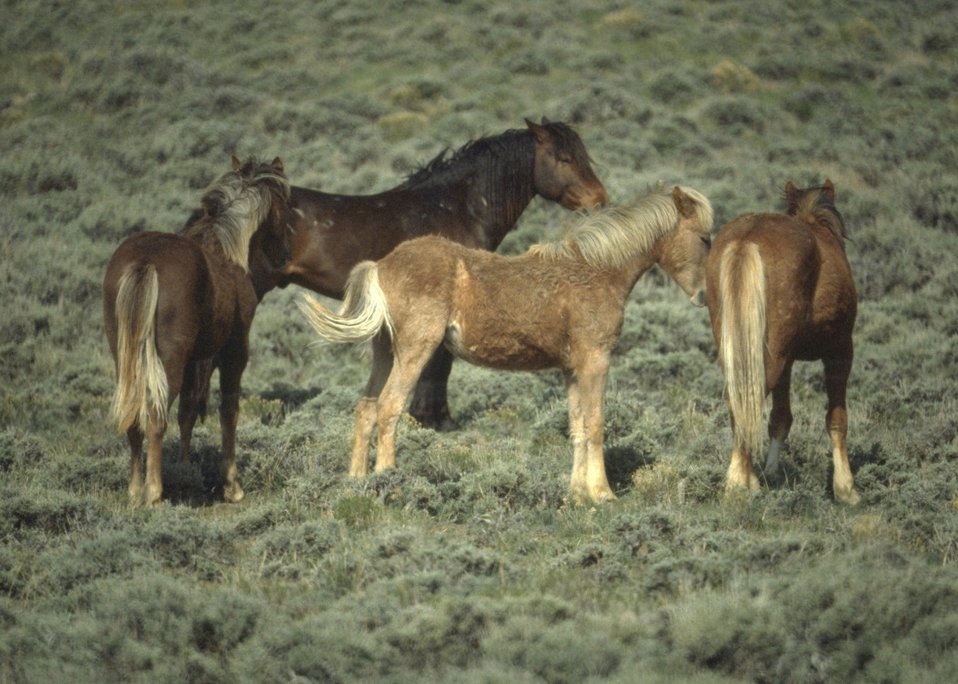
Wild horses.